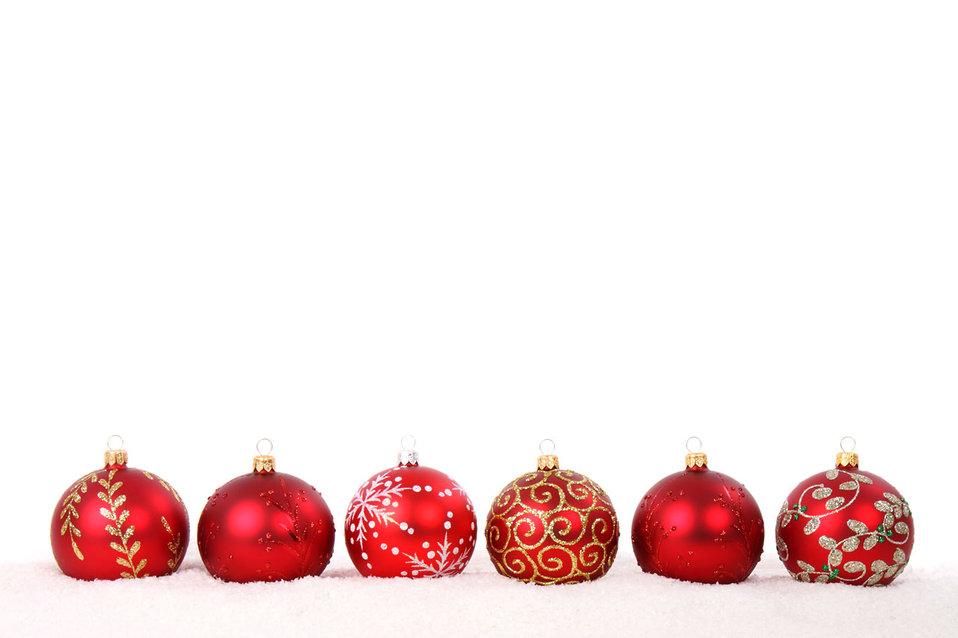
Red christmas baubles in snow isolated on white background.